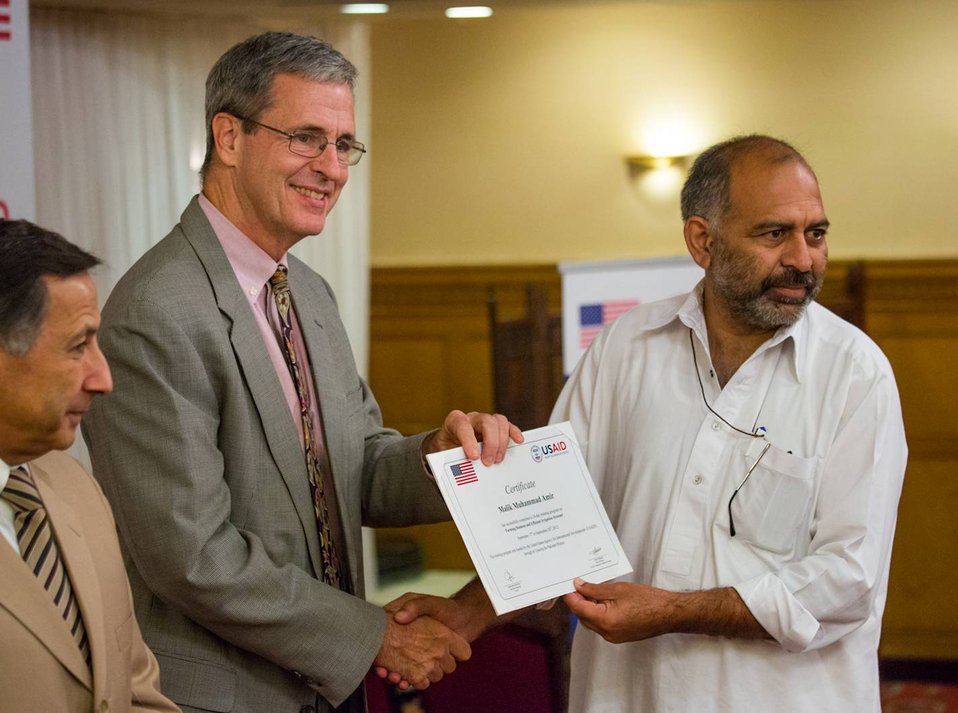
Islamabad, September 26 2012 - Jonathan Conly, USAID Pakistan Mission Director, presenting a certificate to a participant of the training program.